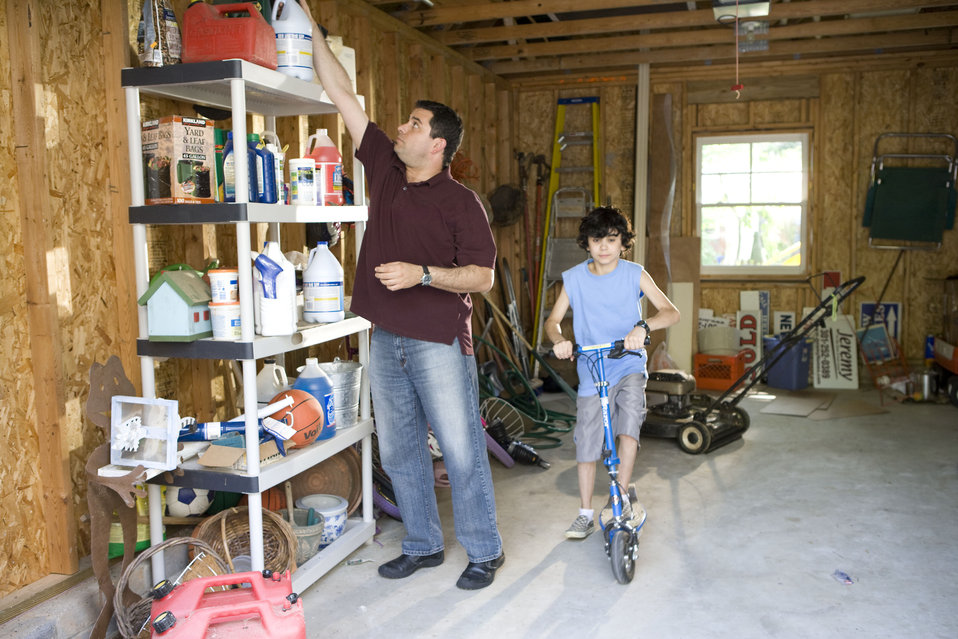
Here we see a father organizing his garage contents, while his son was about to embark on a scooter ride.